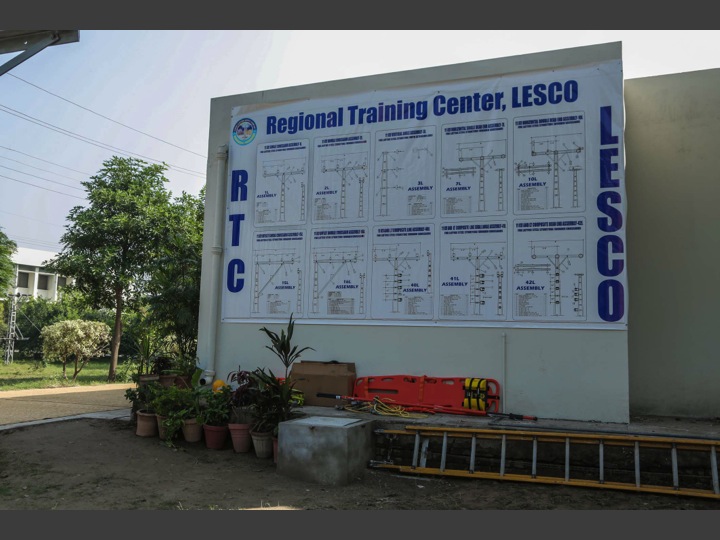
RTC, LESCO Lahore